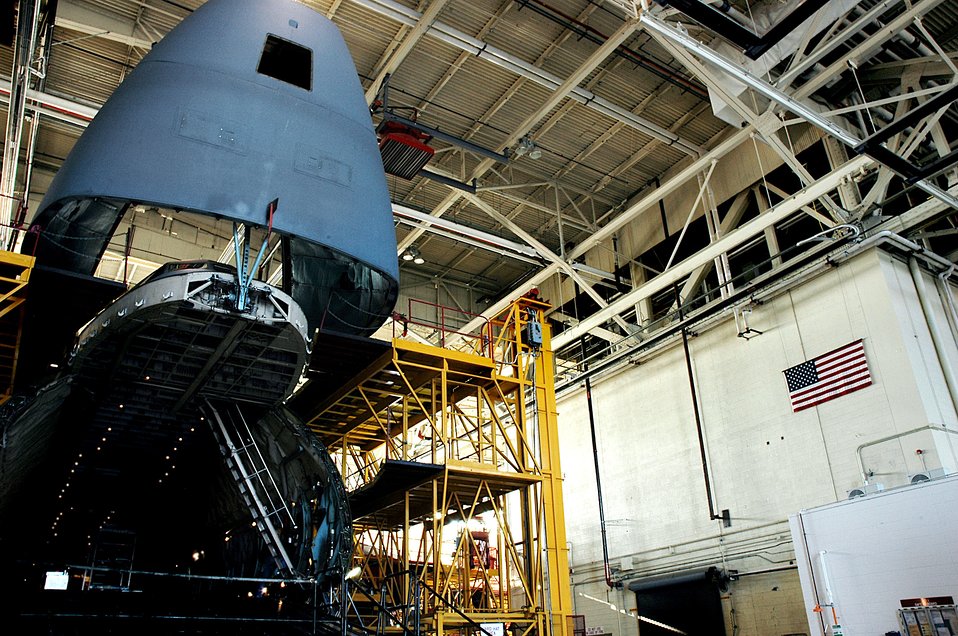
Westover selected as maintenance center for Reserve C-5s

A C-5 Galaxy undergoes inspection in the isochronal inspection hangar at Westover Air Reserve Base, Mass. Air Force officials announced Dec. 13 that Westover ARB will become the new center for in-depth maintenance on all Air Force Reserve C-5 Galaxy aircraft.